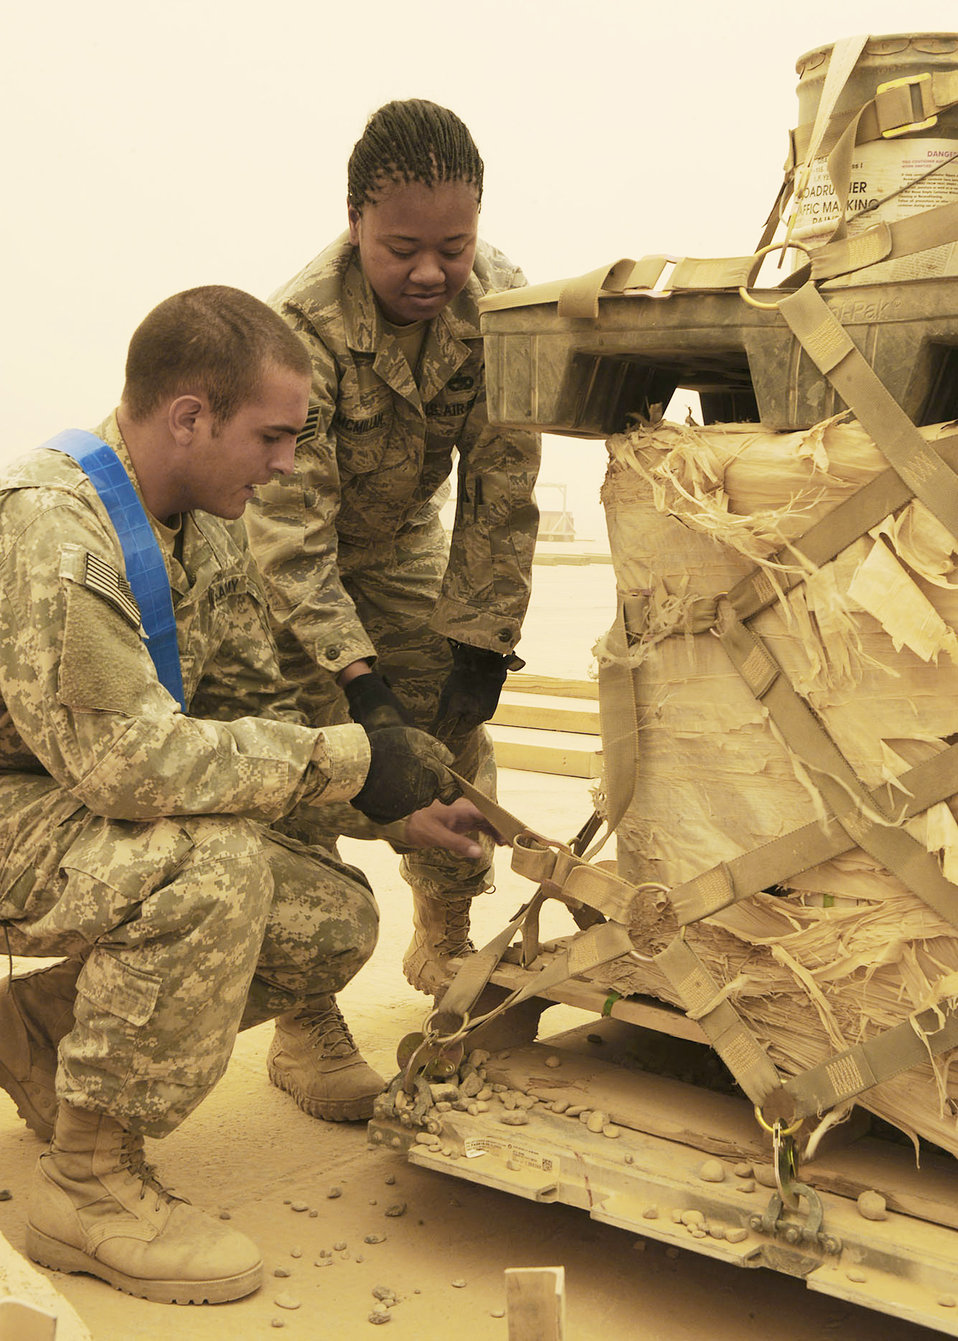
Airmen take reins on Army cargo movement mission

Army Sgt. Josiah Rubi shows Staff Sgt. Starlette McMillan how to properly place a strap on cargo netting so it can be tightened correctly June 18 at Sather Air Base, Iraq. Sergeant McMillan is a part of a 16-person 22nd Movement Control Team taking over the mission from the Army?s 258th Movement Cargo Team. Sergeant Rubi is deployed from Hunter Army Airfield, Savannah, Ga. and a native of Winslow, Ariz. Sergeant McMillan is deployed from Fairchild Air Force Base, Wash., and a native of Silverdale, Wash.